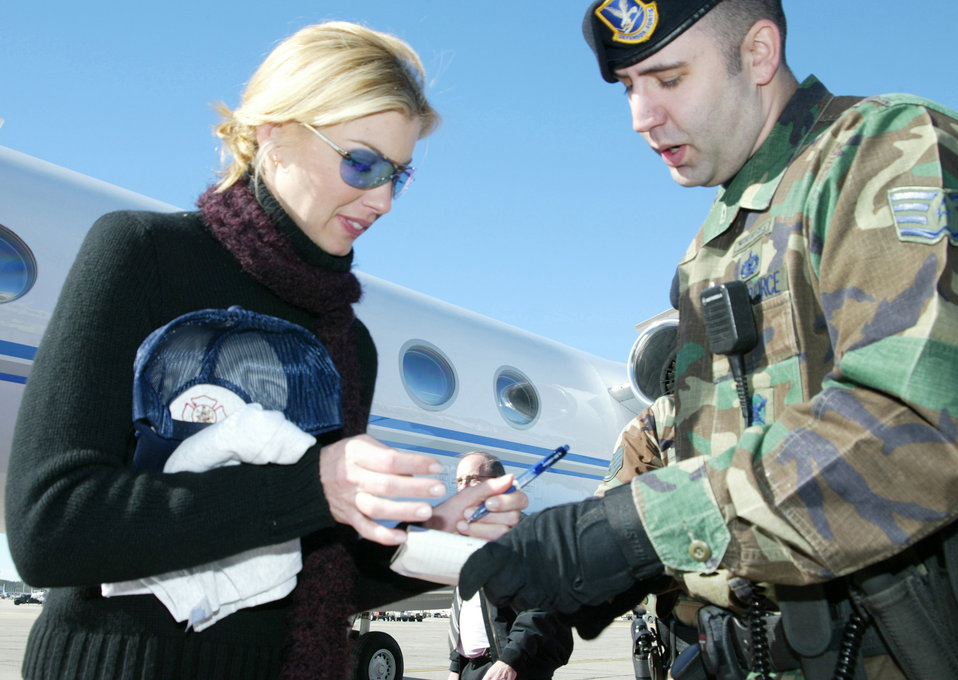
You gotta have Faith

POPE AIR FORCE BASE, N.C. (AFPN) -- Staff Sgt. Mike Garcia gets an autograph from Faith Hill just before she departs the base for Nashville, Tenn. Hill performed a live five-song concert at nearby Fort Bragg on Feb. 13 as a tribute to America's armed forces and as part of a live broadcast of ABC's